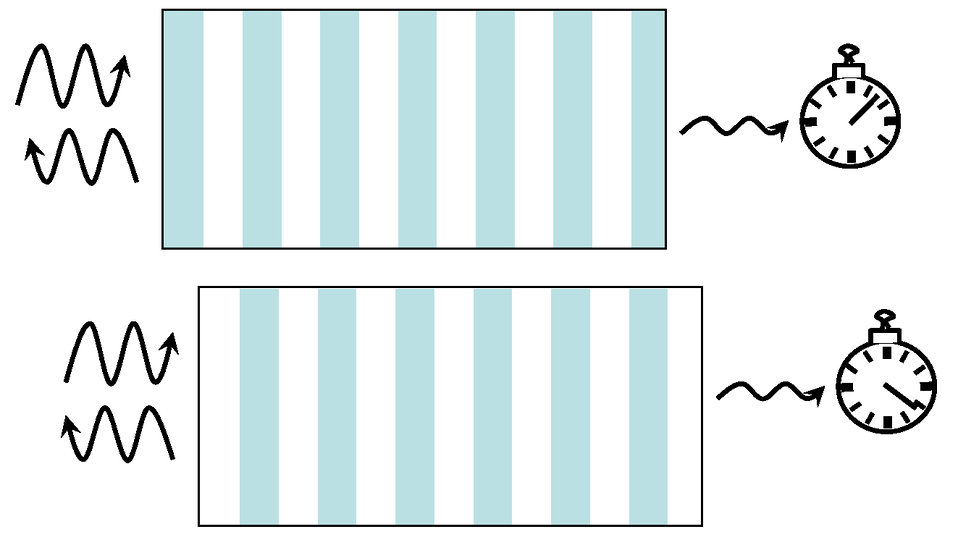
Sub-femtosecond precision; photons

Diagram of two stack configurations with odd numbers of layers. Blue layers have a high index of refraction, white layers a low. The stacks are nearly identical with the exception of where the extra layer is deposited.